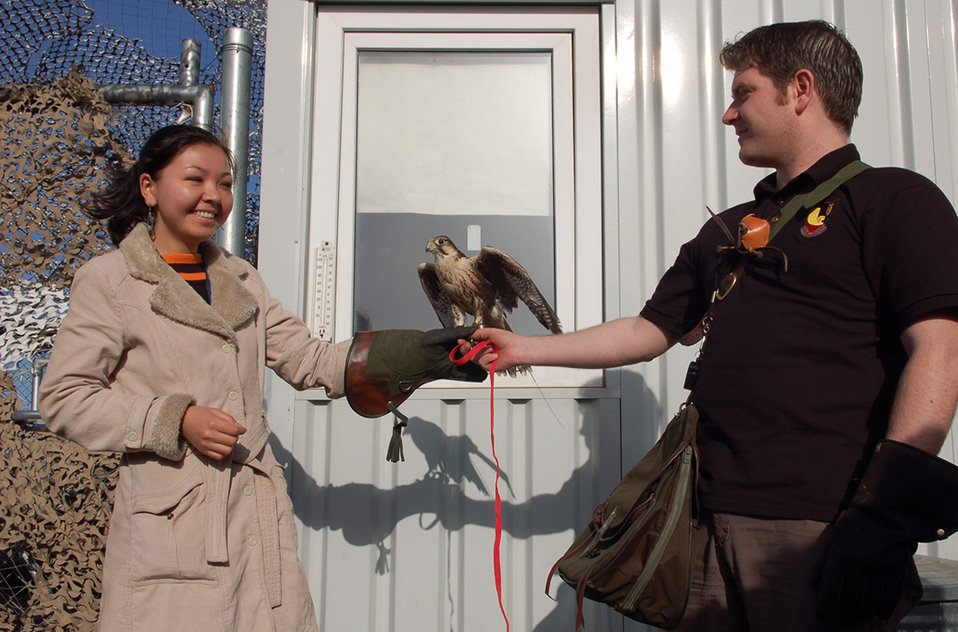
Kyrgyz students get insiders' glimpse of Manas mission

Aiperi Otunchieva holds a falcon named Mustang while the bird's trainer, Alan Marenghi, assists March 25 at Manas Air Base, Kyrgyzstan. Ms. Otunchieva, a 19-year-old sophomore at the American University of Central Asia, visited Manas AB with 12 other students and faculty for an orientation tour and dinner hosted by the 376th Air Expeditionary Wing Public Affairs Office. Mr. Marenghi is a contractor from England who maintains two falcons who play keep the flightline clear of birds that could potentially damage the aircraft on the base.